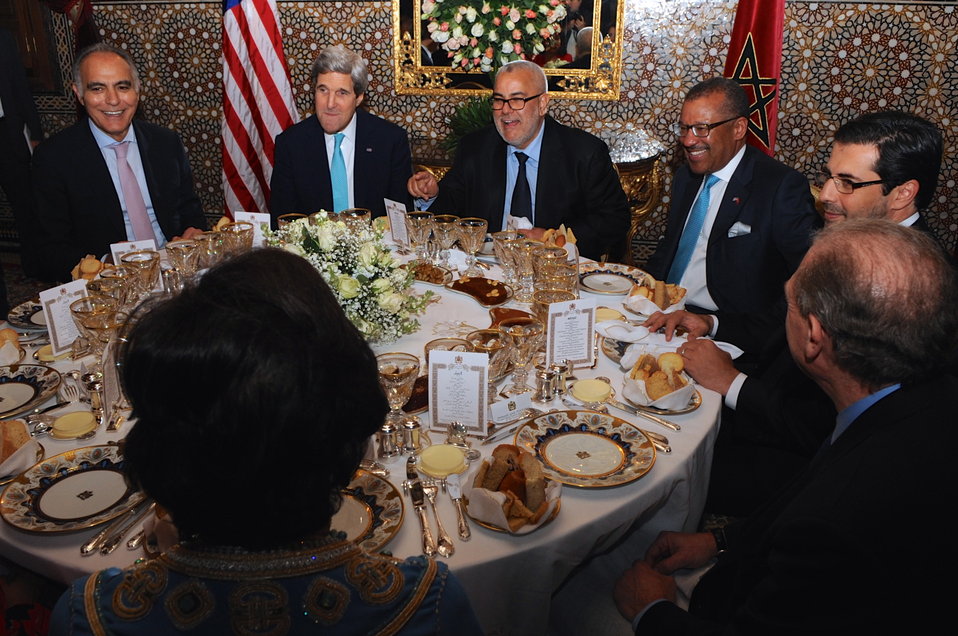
Moroccan Prime Minister Benkirane Hosts Secretary Kerry for Working Dinner

Moroccan Prime Minister Abdeliah Benkirane, center, hosts U.S. Secretary of State John Kerry and fellow U.S. officials for a working dinner at the Guest Palace Residence in Rabat on April 3, 2014, before a Strategic Dialogue between their two countries.